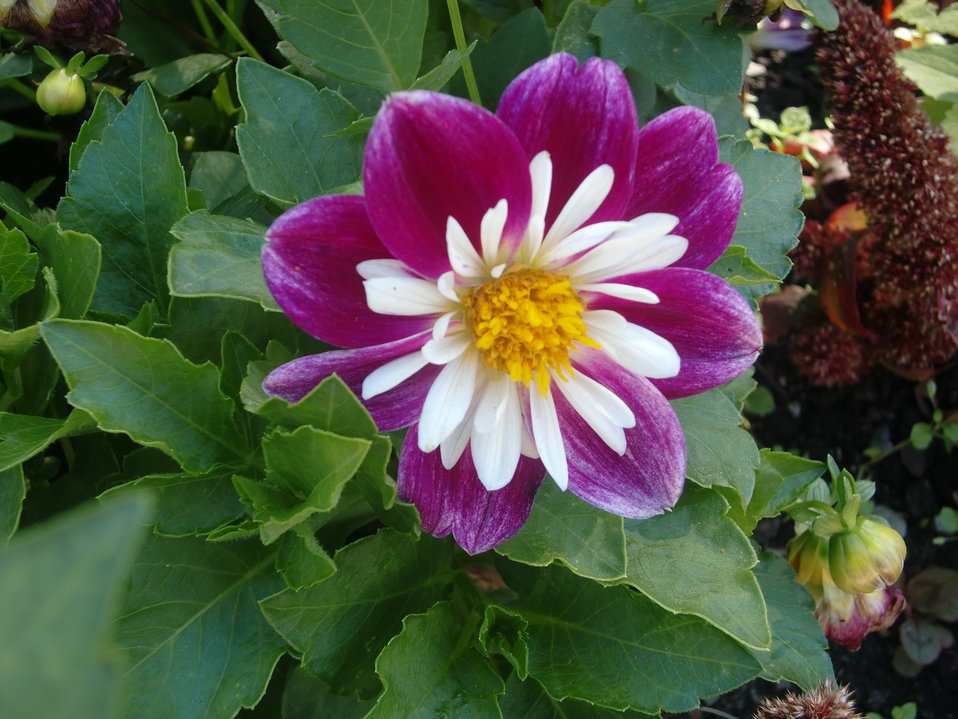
Deutsch: Dahlie im Schlossgarten Bayreuth, August 2013